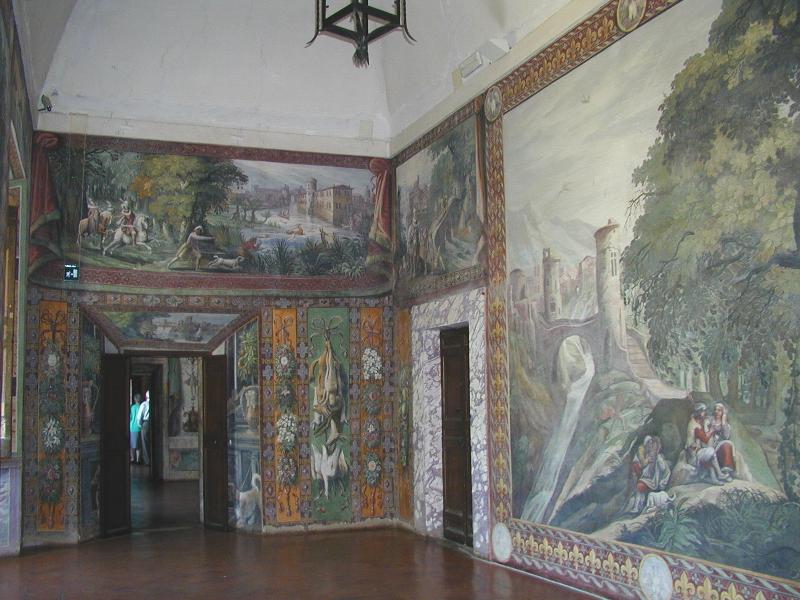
010609 04 villadeste